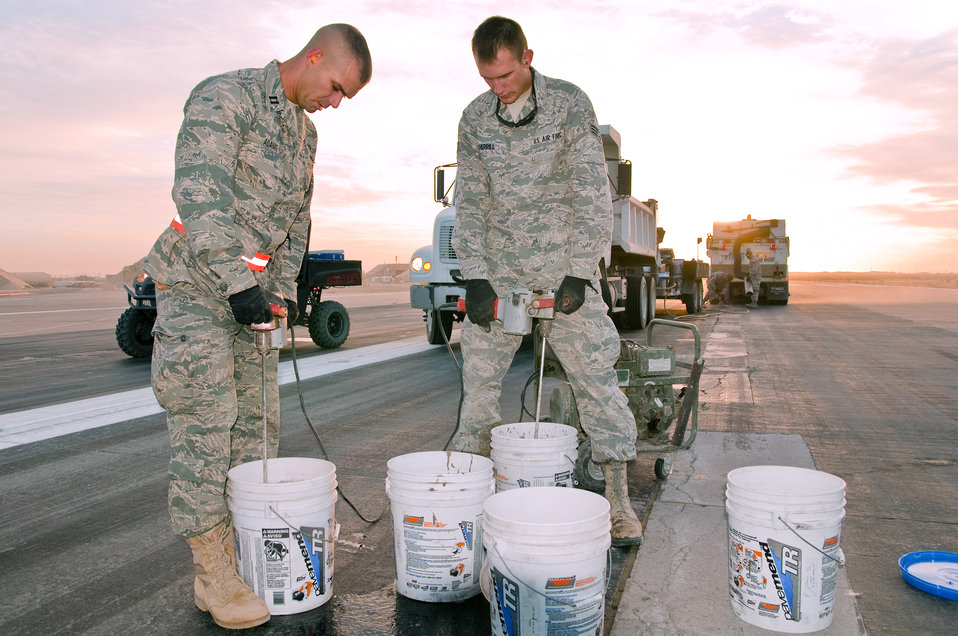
Runway repair team keeps airlift moving at 386th AEW

Capt. Jason Adams (left) and Senior Airman John Sherrill mix rapid-setting mortar Dec. 10, 2010, for use in runway repairs at an air base in Southwest Asia. The repairs will prevent decaying concrete from causing damage to aircraft during takeoffs and landings. Captain Adams and Airman Sherrill are members of the 386th Expeditionary Civil Engineer Squadron.